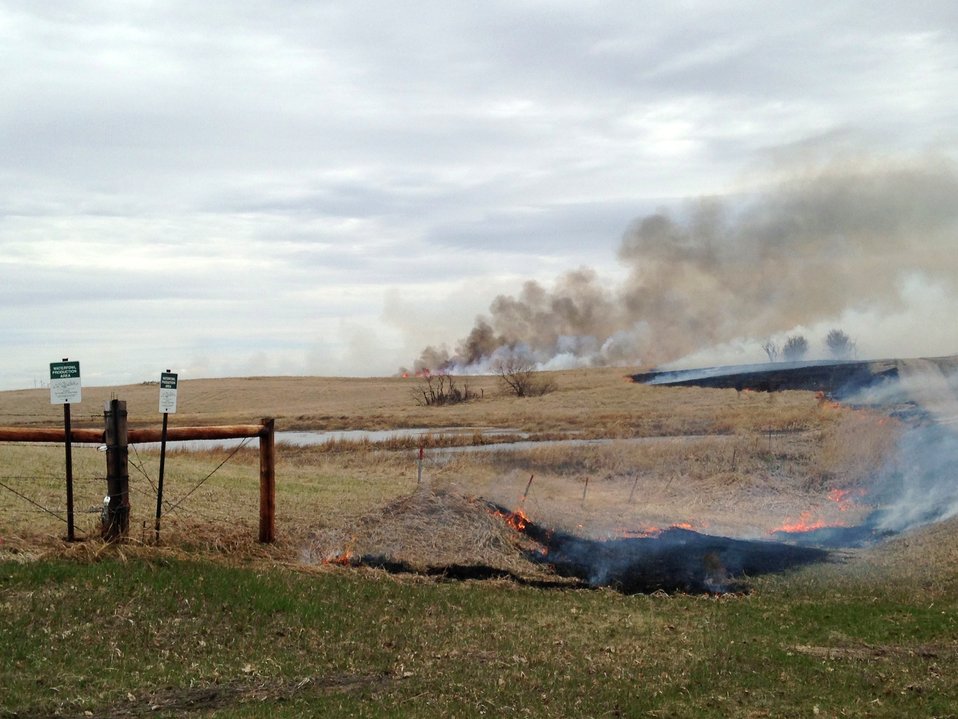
Rau WPA Prescribed Fire

This fire was intentionally lit during a prescribed burn on the Rau Waterfowl Production Area of the Sand Lake Wetland Management District of South Dakota. Prairie ecosystems and plants adapted with the frequent wildfires before human settlement, and they are an important part of maintaining good habitat. They remove excess litter and dead plant growth, opening up the canopy for new seedlings; they stimulate the growth of native plants, and they set back the invasion of non-native grasses and some weeds. The ash from a fire also adds nutrients for new plant growth. The fire in this photo was lit from the downwind side, so it is described as 'backing'. It is slowly burning into the wind and has shorter flame lengths compared to its opposite--a head fire. You can see some of the flames from a head fire in the distance.